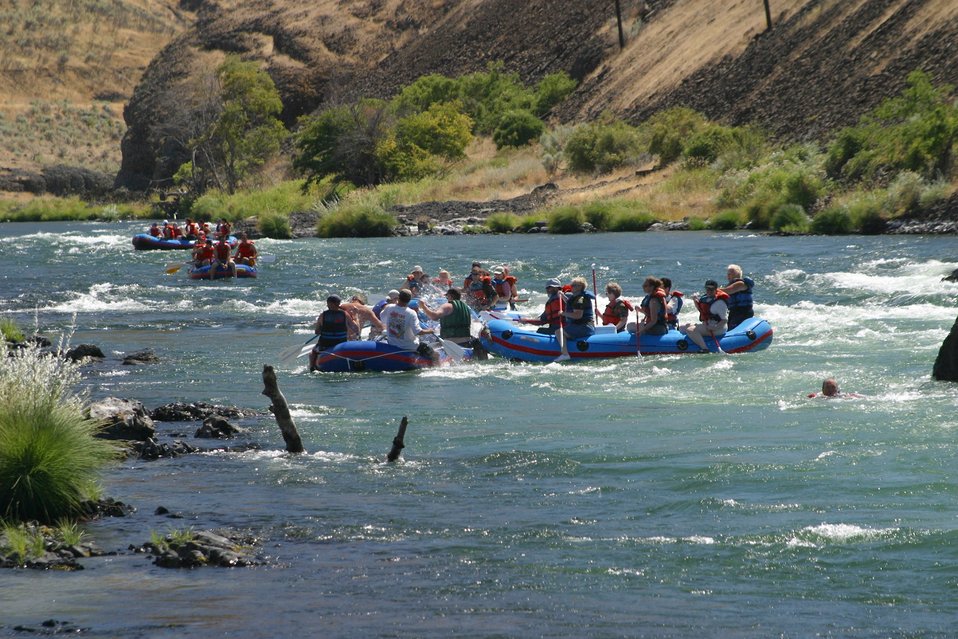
Looking up stream from the Sandy Beach take out.